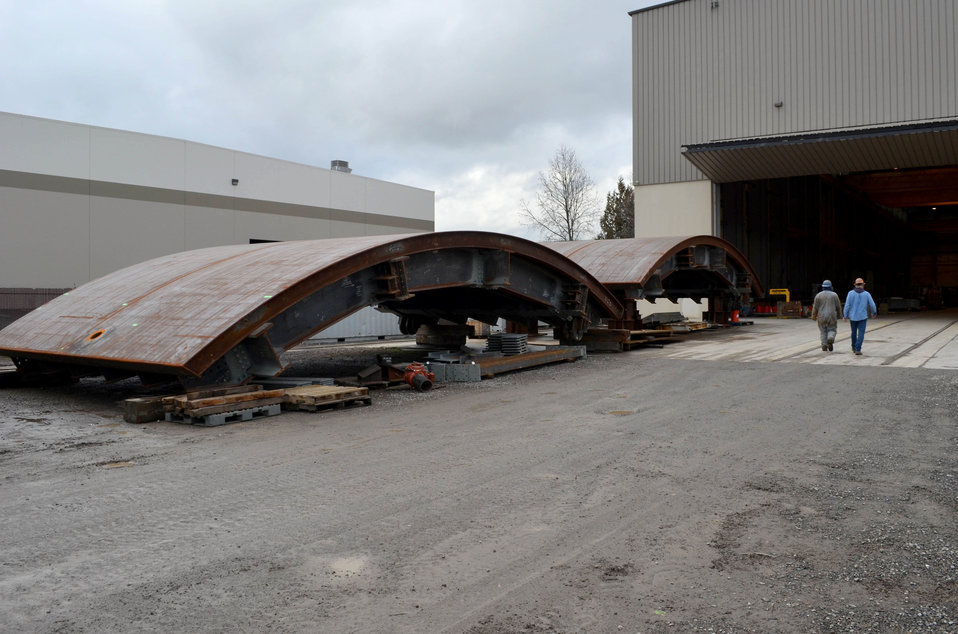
Giant Folsom spillway gates nearly ready for 600-mile journey to dam

Tainter gate skin plates for the new Folsom Dam auxiliary spillway await testing at the Oregon Iron Works facility in Vancouver, Wash., Jan. 31, 2014. After the gates are constructed they are tested before being painted with all-weather coating and prepared for delivery to Folsom Dam near Sacramento, Calif. The gates will be trucked more than 600 miles to Folsom Dam, where they will be installed on a new auxiliary spillway in 2014. Photo cropped for emphasis.